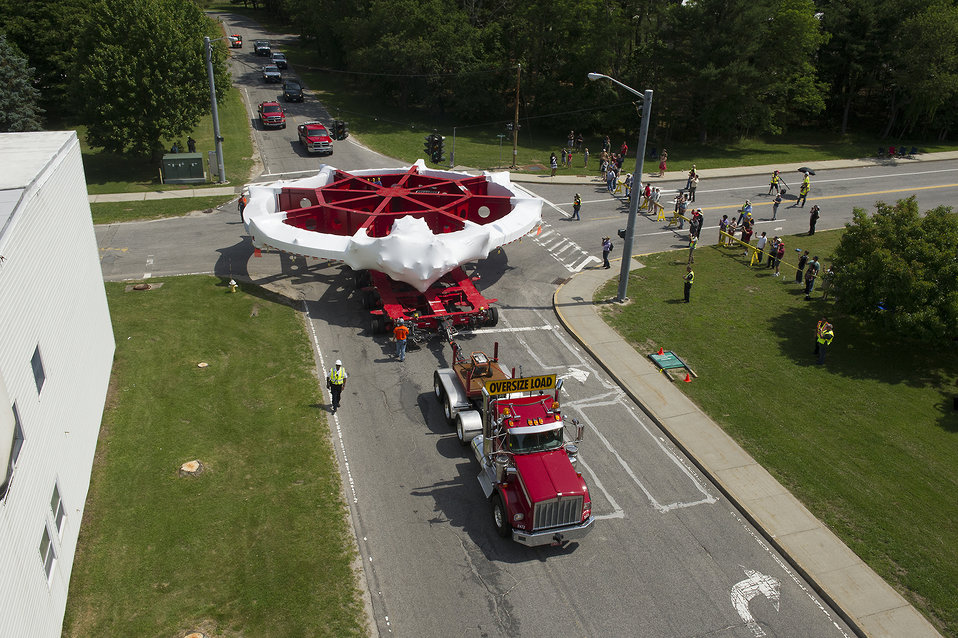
Photo of the Week: An Incredible Journey -- Transporting a 600-ton Magnet

The Muon g-2 (pronounced gee minus two) is an experiment that will use the Fermilab accelerator complex to create an intense beam of muons -- a type of subatomic particle -- traveling at the speed of light. The experiment is picking up after a previous muon experiment at Brookhaven National Laboratory, which concluded in 2001.

In this photo, the massive electromagnet is beginning its 3,200-mile journey from the woods of Long Island to the plains near Chicago, where scientists at Fermilab will refill its storage ring with muons created at Fermilab’s Antiproton Source. The 50-foot-diameter ring is made of steel, aluminum and superconducting wire. It will travel down the East Coast, around the tip of Florida, and up the Mississippi River to Fermilab in Illinois. Transporting the 600-ton magnet requires meticulous precision -- just a tilt or a twist of a few degrees could leave the internal wiring irreparably damaged.